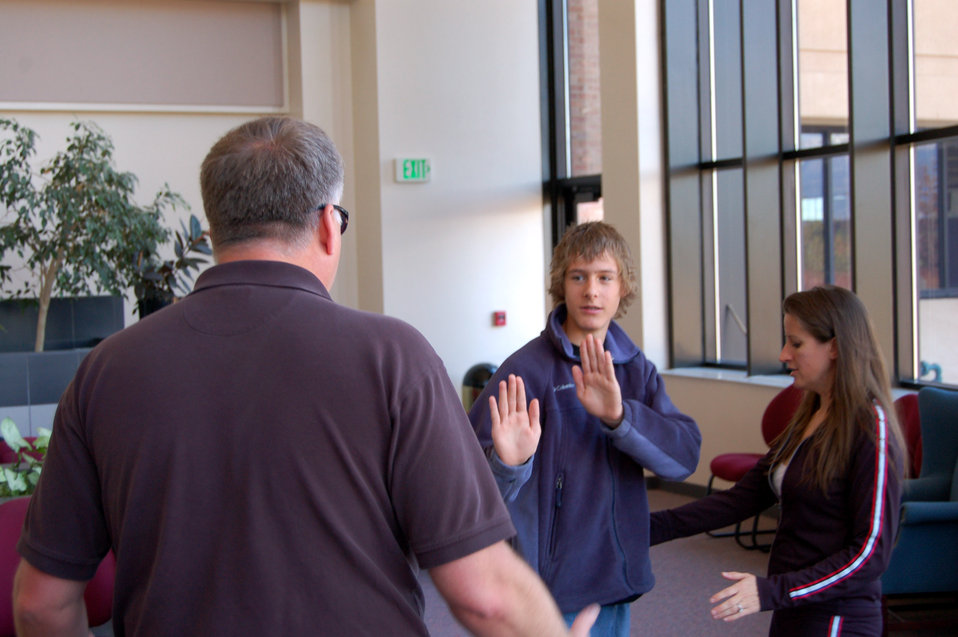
Airmen get smart with sexual assault training

Joshua Beoddy practices a defensive posture as instructor Sam Rush-Walton critiques his stance and instructor Karl Herndon playacts as an adversary April 11 during a Fullpower workshop. The workshop was held in recognition of April being Sexual Assault Awareness Month. The attendees learned about protecting personal boundaries, de-escalating a threatening confrontation, dealing with verbal attacks, stopping sexual harassment and using physical self-defense to escape from an assault